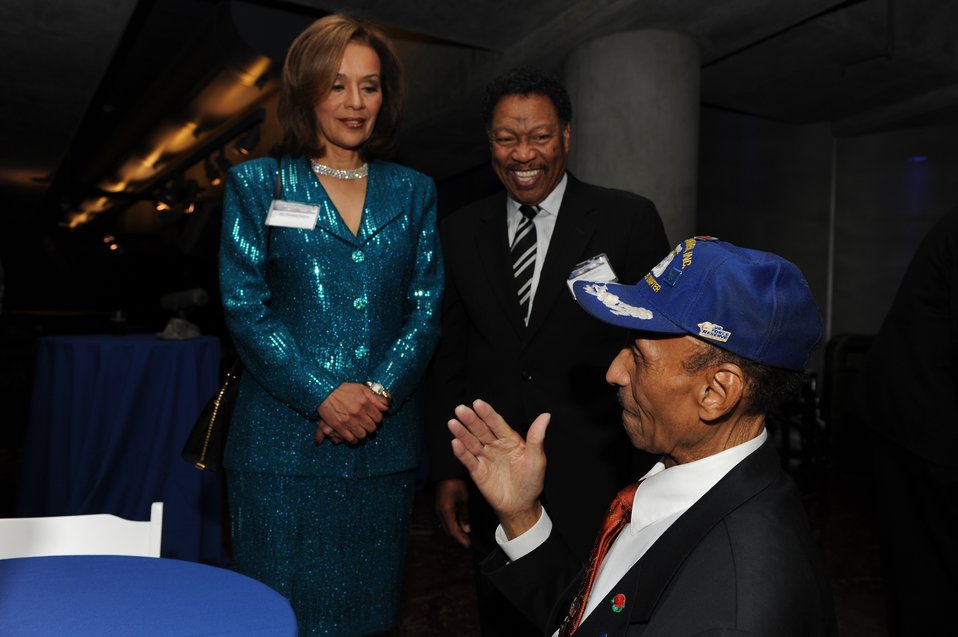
Stars visible at, from LA observatory

Marilyn McCoo and Billy Davis Jr. talk to O. Oliver Goodall Nov. 17 at the Griffith Park Observatory in Los Angeles. Mr. Goodall is a Tuskegee Airman who was honored by the Friends of the Observatory during Air Force Week Los Angeles. Ms. McCoo and Mr. Davis were former singers of the group, The Fifth Dimension.